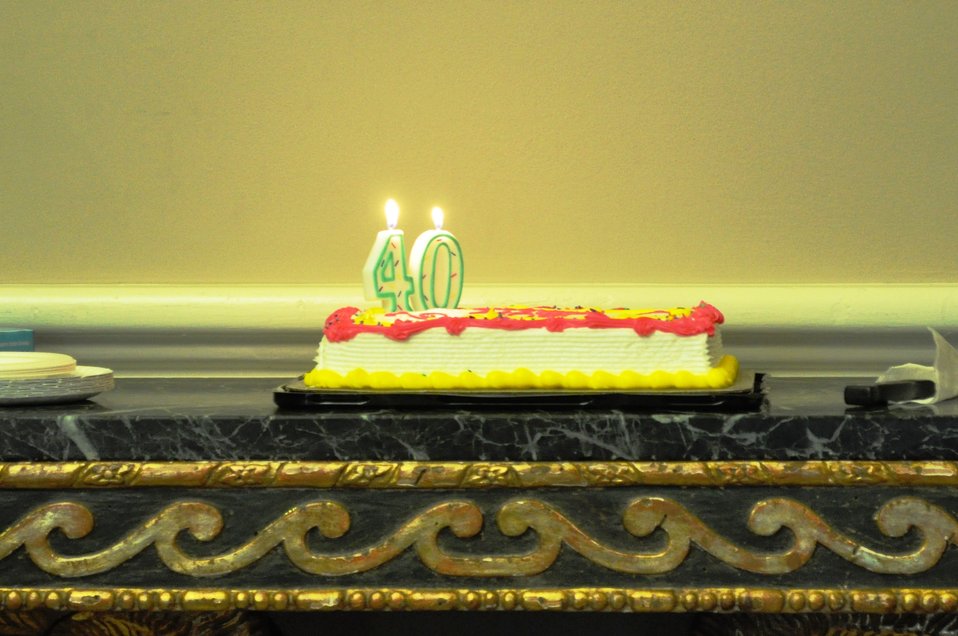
Cake from Treasury staff to Sec. Geithner, 09/16/10

Cake from Treasury staff to Secretary Geithner following his 40th testimony before Congress this afternoon.